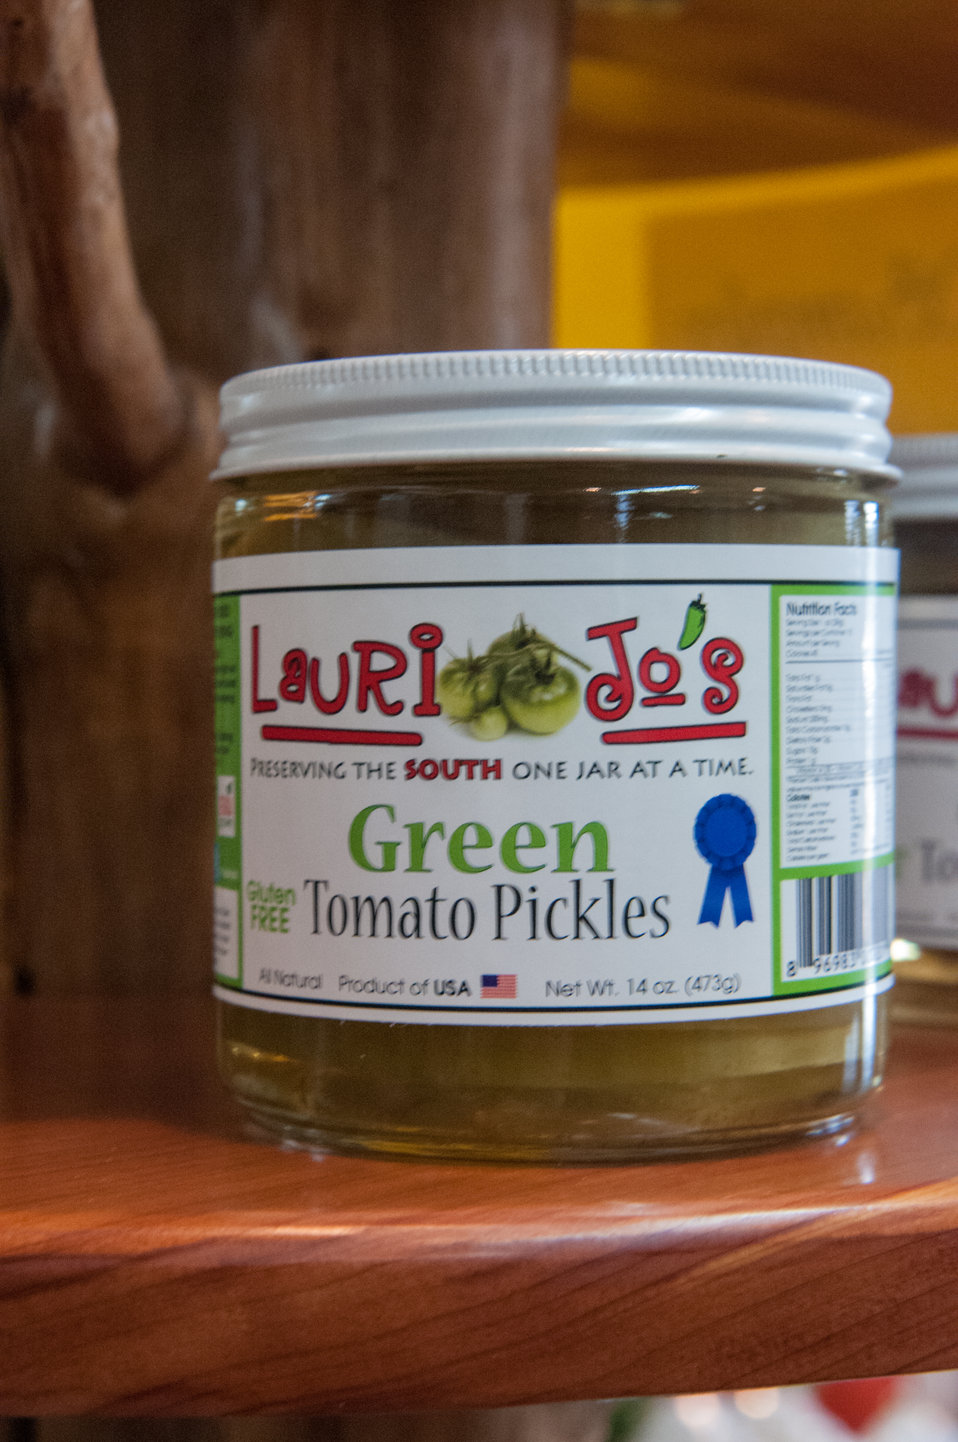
Jar of Green Tomato pickles sits on the shelf at Laurie Jo’s Southern Style Canning business in Norman Park, Colquitt County, GA on Mar. 7, 2013. The business has increased its production to 12 items that now includes pickled green tomatoes, pickled okra, pickled asparagus pickled green beans, red and green pepper jellies, pineapple pepper jelly salsa and pepper sauce. Consumers may now purchase Lauri Jo’s Southern Style Canning Line in Whole Foods, Earth Fare and Kroger stores across 20 states. Lauri Jo Bennett applied for a U.S. Department of Agriculture (USDA) Rural Development (RD) Rural Business Enterprise Grant (RBEG) to help market her products. The grant from USDA has enable Lauri Jo to employ 26 people. The USDA Strike Force Initiative has designated Colquitt County, GA as a Strike Force county selected to receive assistance to relieve persistent poverty in historically high-poverty counties.